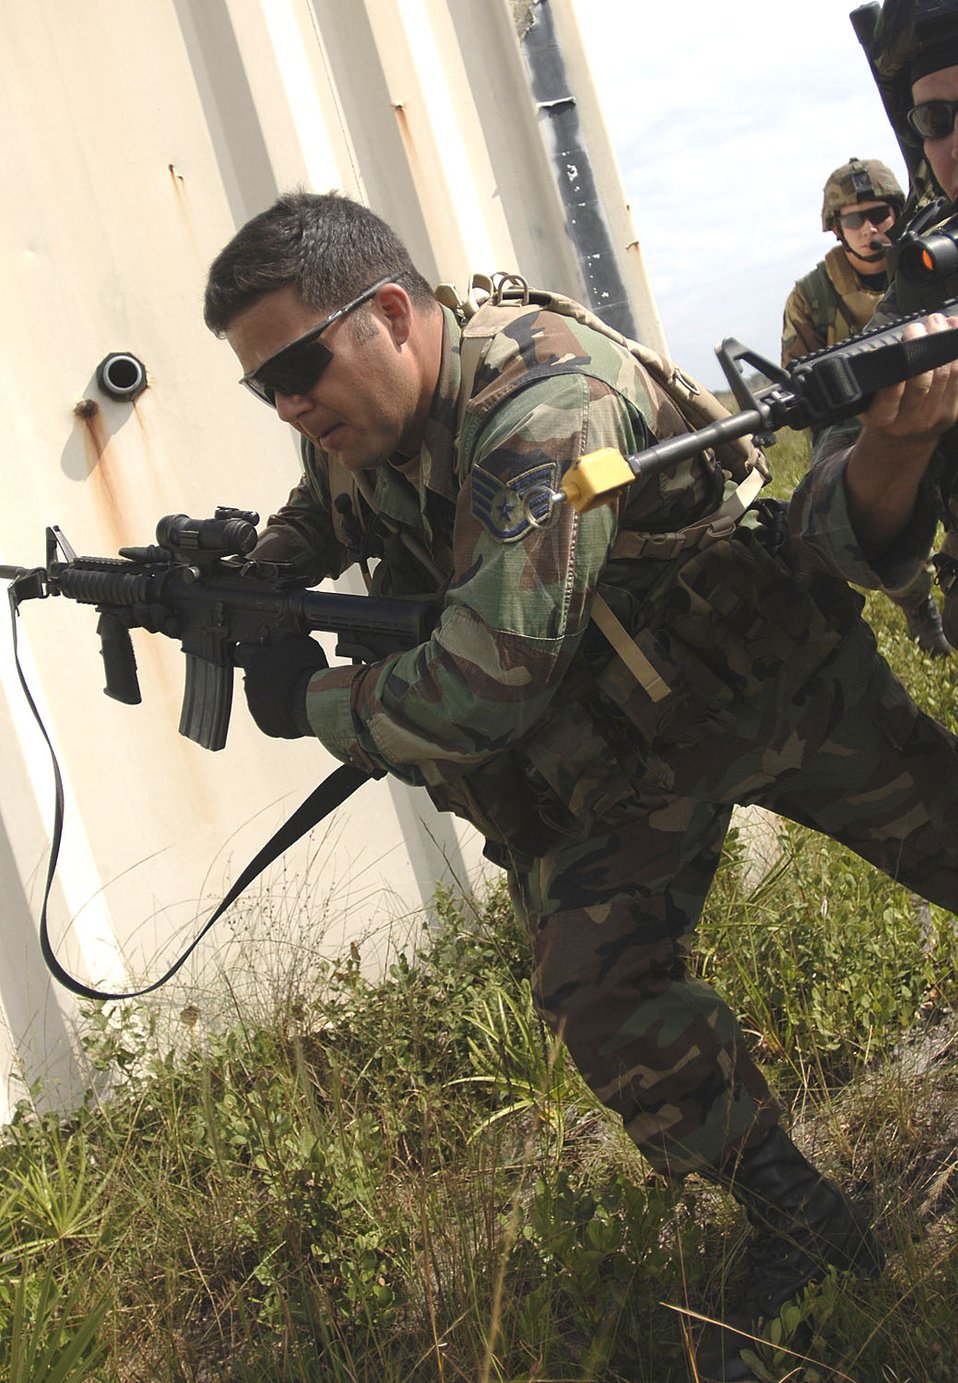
Atlantic Strike provides joint training for interdependent warfighters

Staff Sgt.Timothy Nieto darts across a simulated village while under fire during Atlantic Strike IV at Avon Park, Fla., Oct. 23. Atlantic Strike is a U.S. Central Command Air Forces initiative and the only joint tactical level urban close-air support training event dedicated to supporting the war on terrorism.